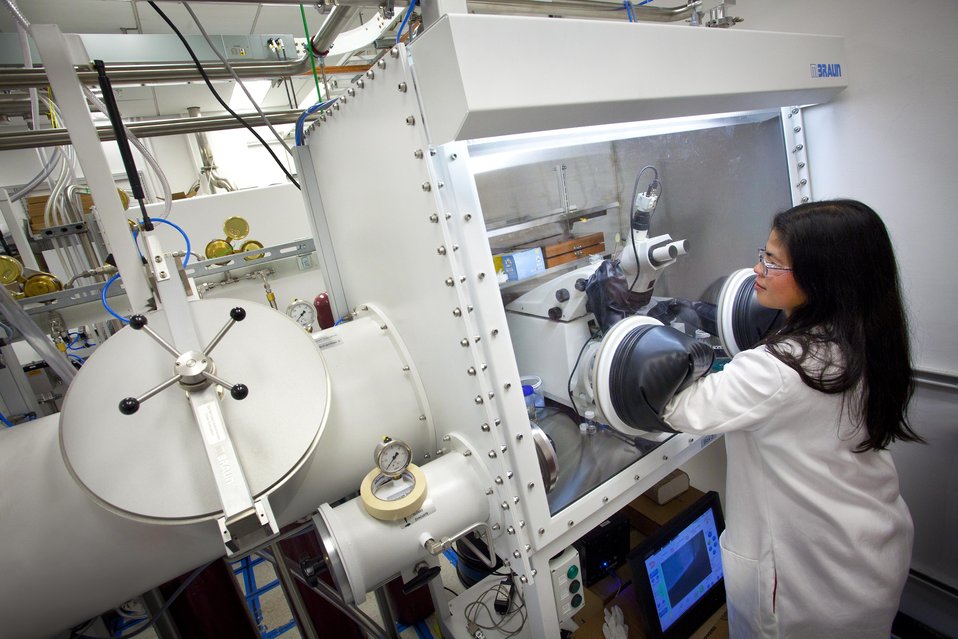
Lawrence Berkeley National Laboratory scientist prepares a sample for transmission electron microscopy imaging using a microtome in a battery lab at Berkeley Lab's Environmental Energy Technologies Division.

Lawrence Berkeley National Laboratory is one of several major U.S. research institutions and industrial firms that form the Joint Center for Energy Storage Research, a public-private partnership which aims to overcome critical scientific and technical barriers and create new breakthrough energy storage technologies.